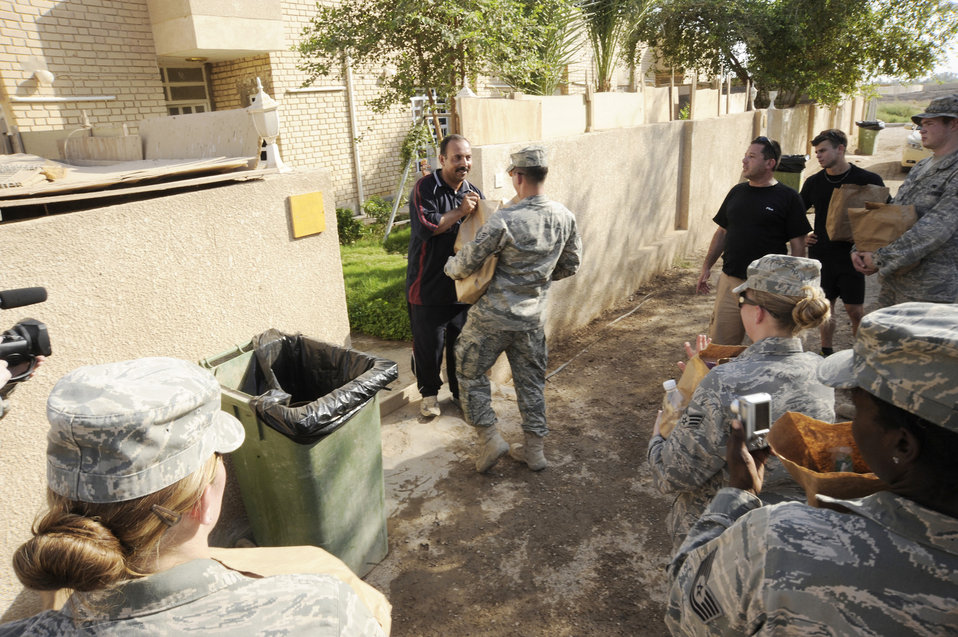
Airmen build ties with Iraqi families

Tech. Sgt. Theodore Tetreault hands donated items to an Iraqi July 24 in Baghdad. Forty-five Airmen and Soldiers volunteered to visit and distribute donated items to local Iraqi families as part of the Sather Air Base Good Neighbor Program. Sergeant Tetreault is a Multinational Corps-Iraq Infrastructure Protection and Reconstruction geo base technician. Sergeant Tetreault is deployed from Nellis Air Force Base, Nevada, and is a native of Cape Cod, Mass.